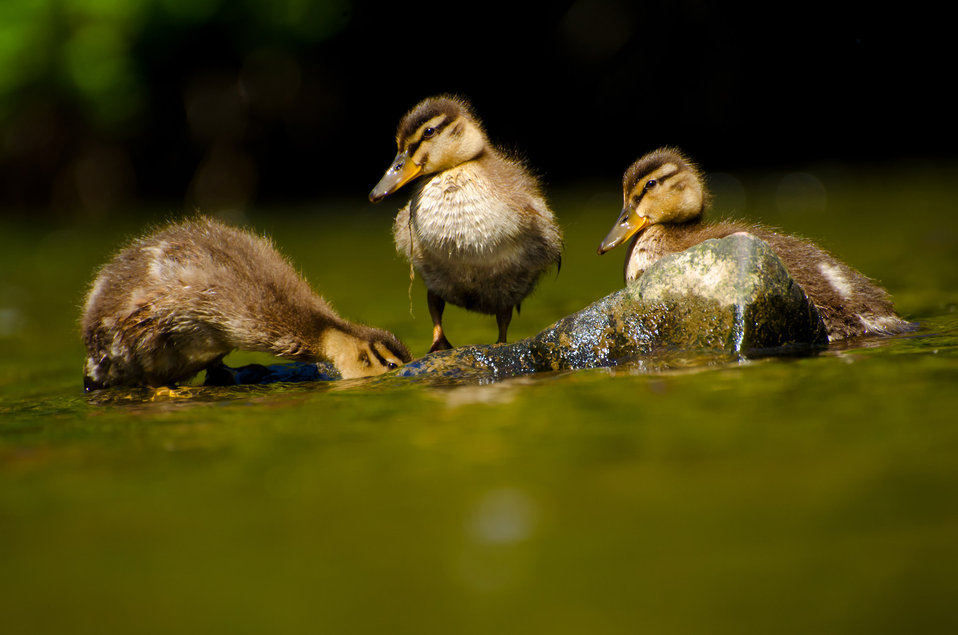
Duckling swimming in water.